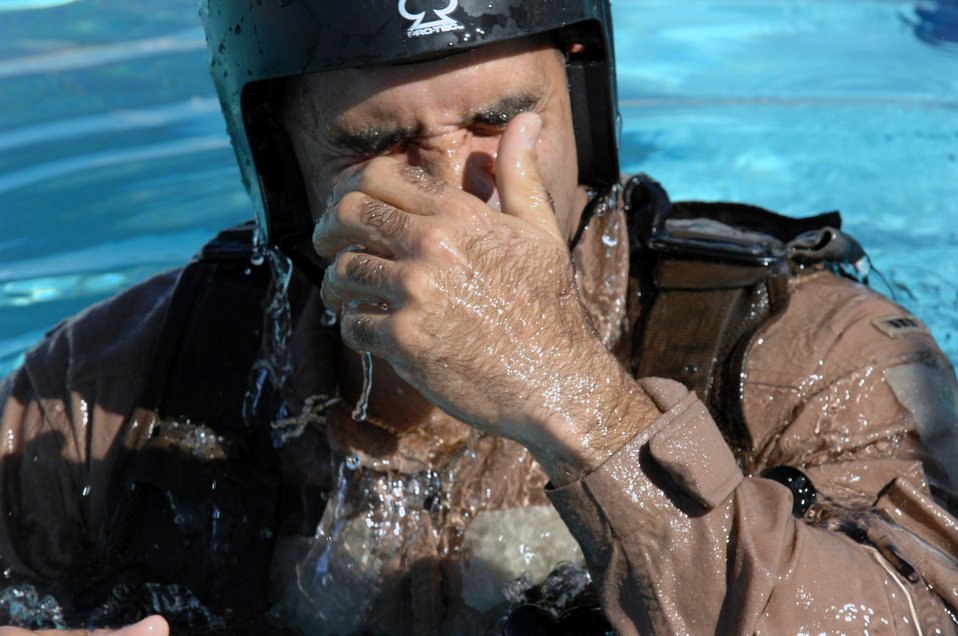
Practice makes perfect

Army Chief Warrant Officer Ralph Hernandez wipes his eyes after exiting a helicopter underwater dunker during his survival training. The training is conducted by survival, evasion, resistance and escape instructors at Nellis Air Force Base, Nev. The Army National Guardsman is an OH-58 Scout instructor pilot.